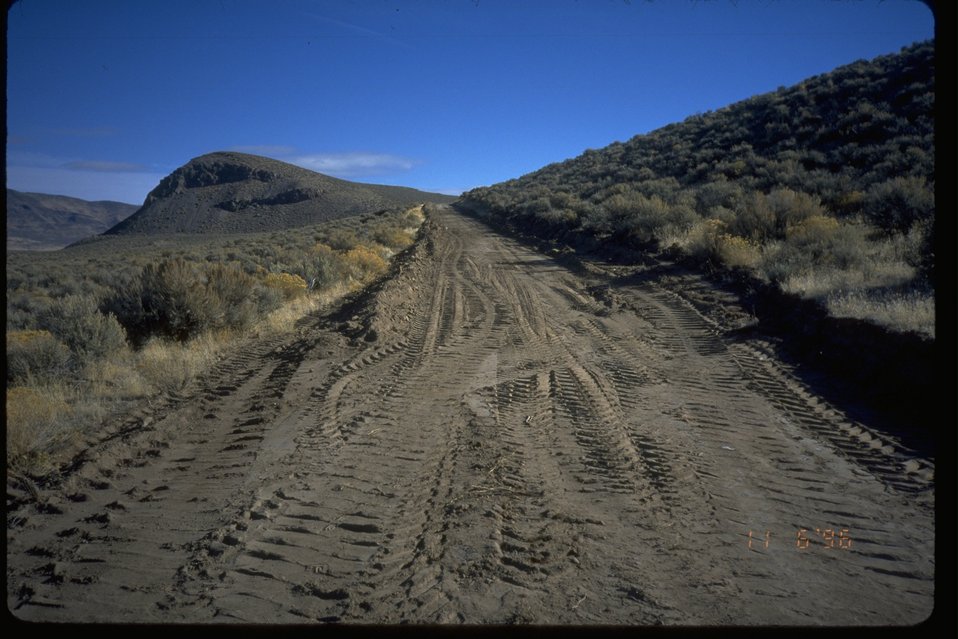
Road construction on the road to Perlite Mine.